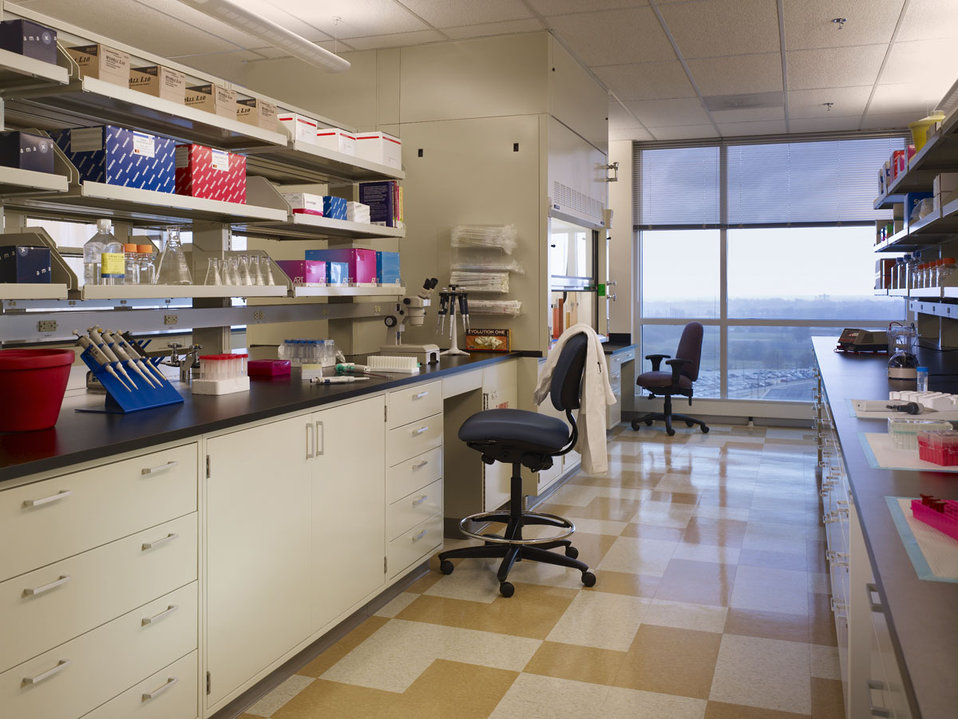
IRP lab bench